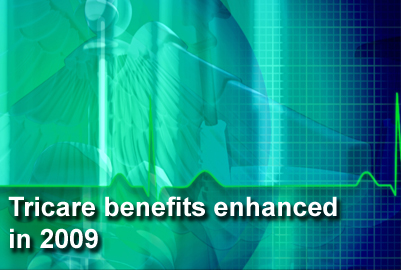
Tricare benefits

Tricare officials had a busy year as they expanded benefits and customer service in 2009.